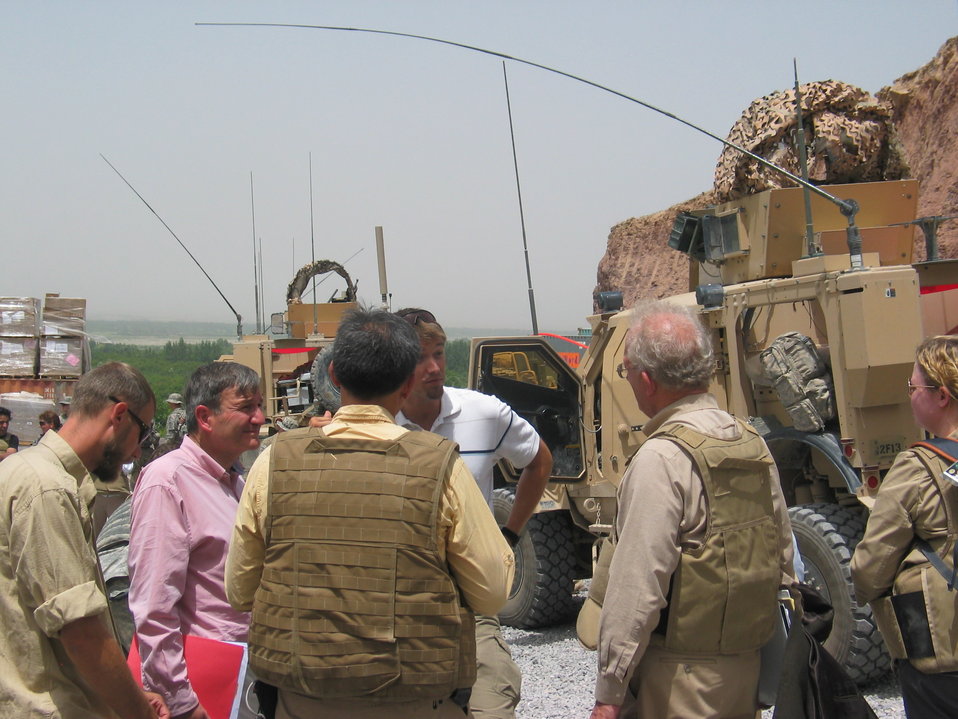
CODEL Berman